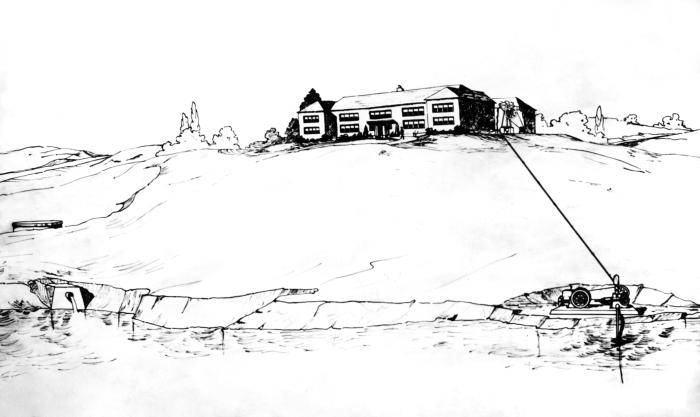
This historic 1922 drawing depicted the sources of water-borne pollution responsible for a typhoid fever epidemic at the Lake Julia Sanatorium in Puposky, Minnesota. The pumping station on the lower right did not filter the water effectively enough to neutralize the contamination resulting from the institution's sewer line emptying into the potable water source.